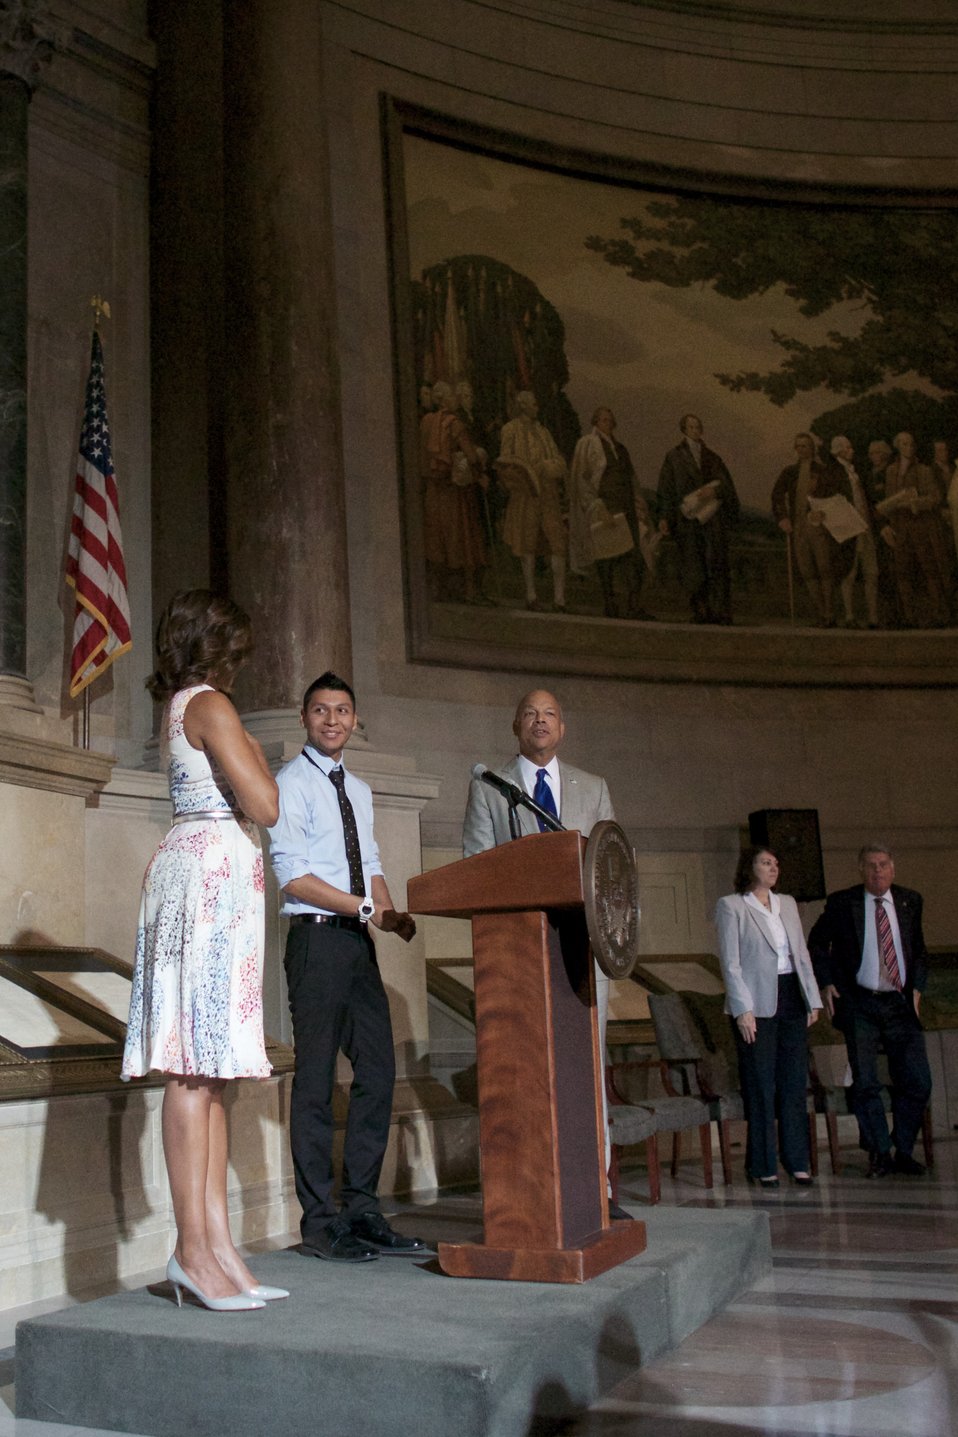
Naturalization Ceremony with Michelle Obama